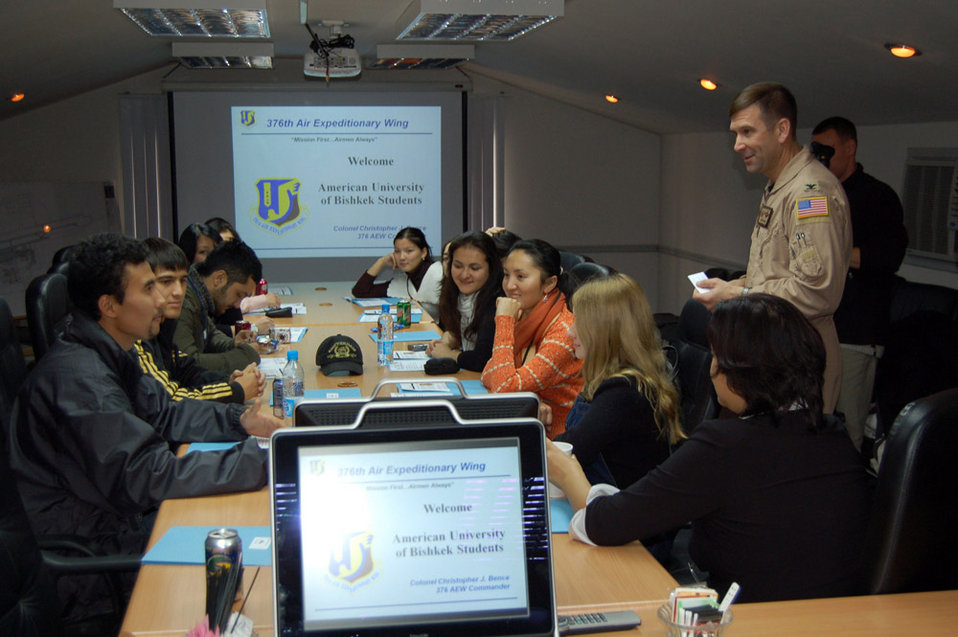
Manas Airmen open base to Kyrgyz college students

Col. Christopher Bence gives a mission briefing to students from the American University of Central Asia during a Nov. 5 visit to Manas Air Base, Kyrgyzstan. Students learned about the mission and the Airmen who serve at the base. Colonel Bence is the 376th Air Expeditionary Wing commander.